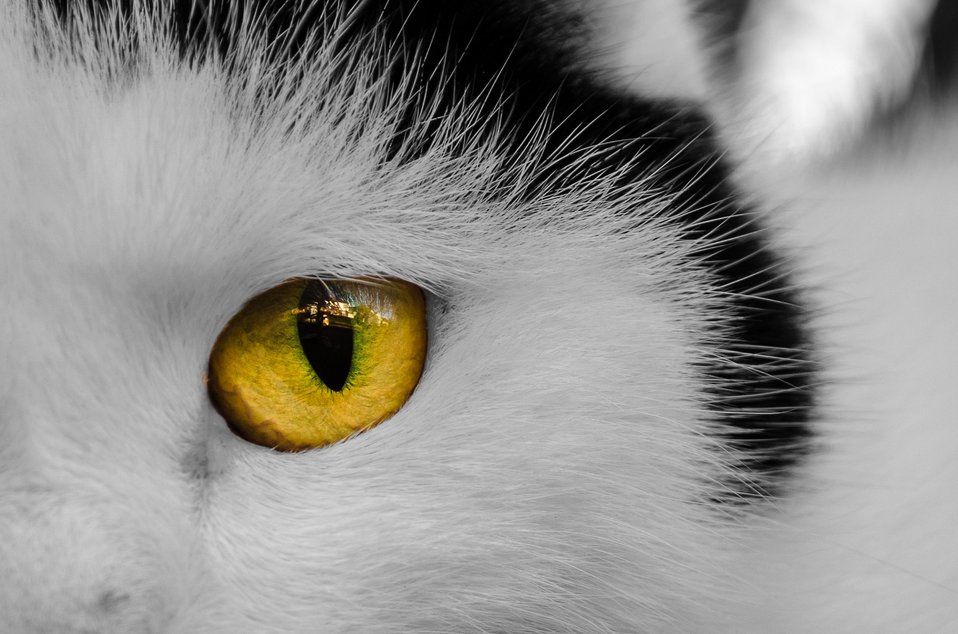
Cat's eye

Close-up of a cat's eye.